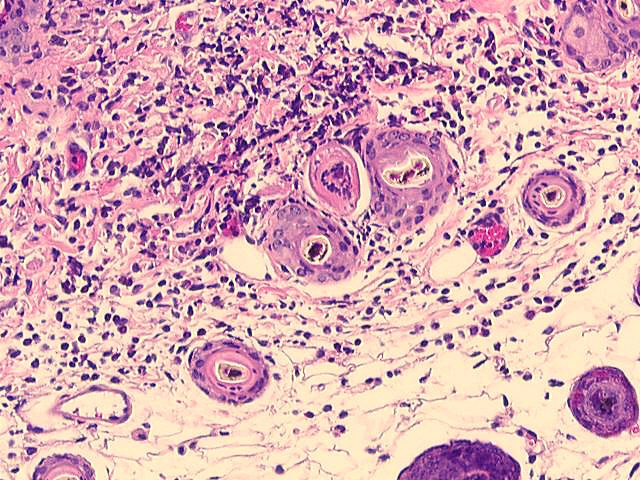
Schistosomulum in abdominal skin of a vaccinated mouse.